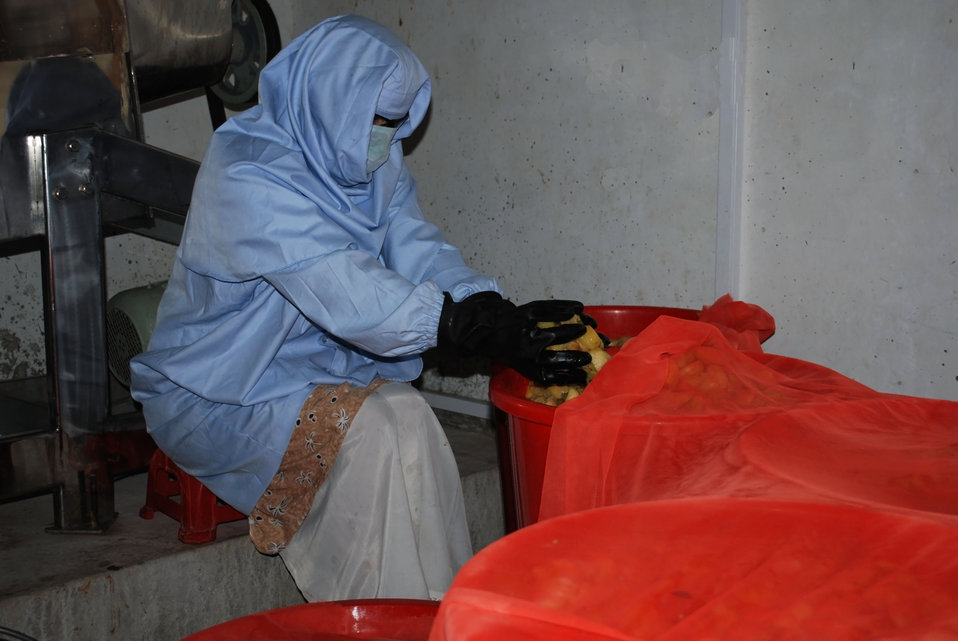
'On the Road' in Nangarhar Province